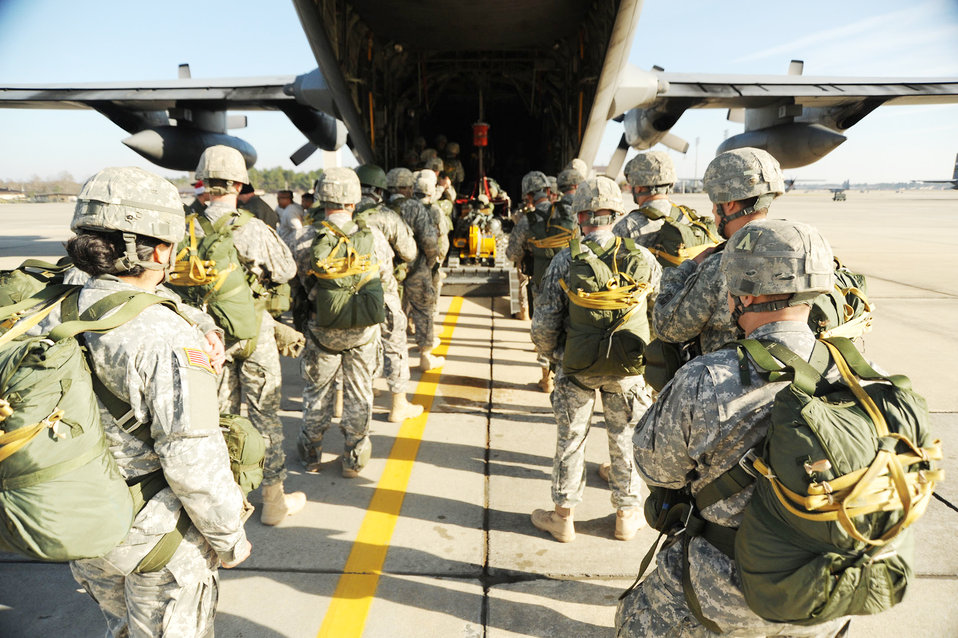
Everybody knows that Santa is a paratrooper

Soldiers load onto a C-130 Hercules Dec. 6, 2009, at Pope Air Force Base, N.C. More than 1,000 paratroopers donated a toy to get the opportunity to jump into Fort Bragg's Sicily Drop Zone. Other crews from the National Guard's 145th Airlift Wing from Charlotte, N.C., and the Air Force Reserve's 910th Airlift Wing from Youngstown, Ohio, participated in the 12th Annual Randy Oler Operation Toy Drop event.